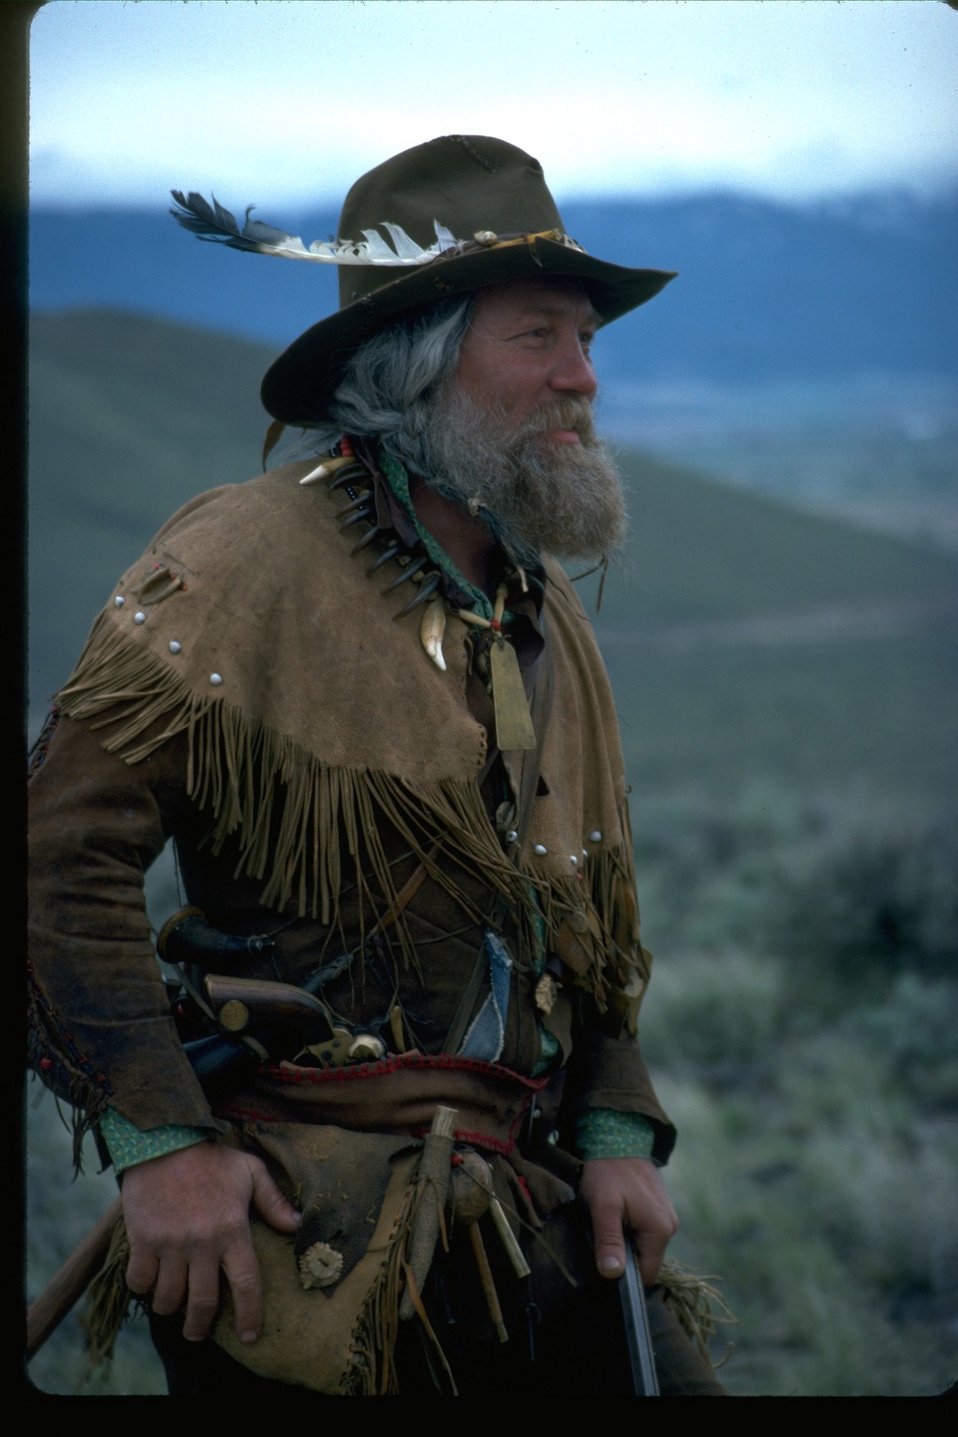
Mountain Man re-enactor.